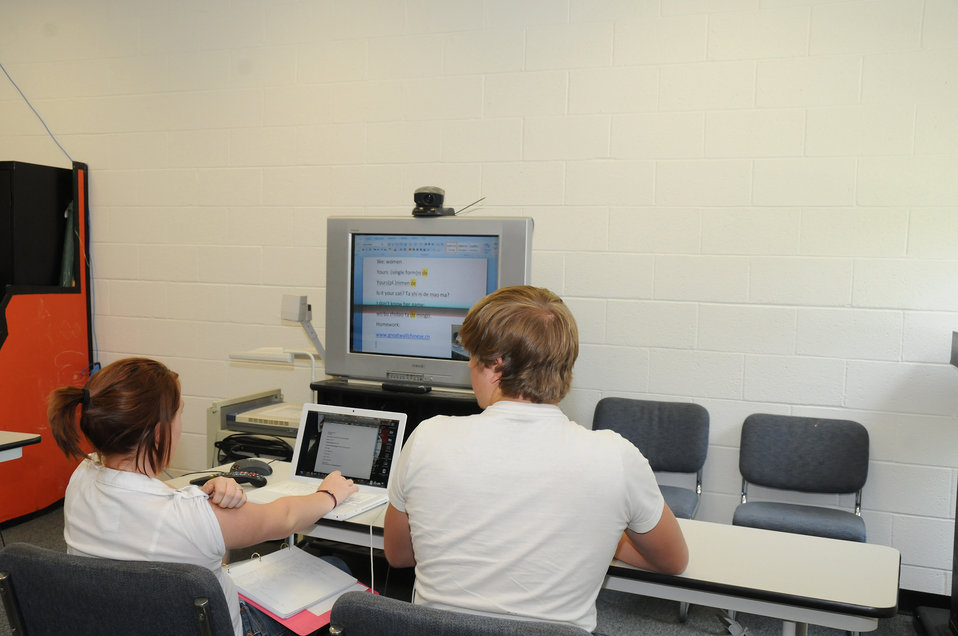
The students at Crescent High School in Crescent, Oklahoma are taking online courses in foreign languages, such as Chinese on August 9, 2009. The school received funding through the U. S. Department of Agriculture (USDA) Rural Development (RD) Distance Learning and Telemedicine Program (DLT) allocated through the American Recovery and Reinvestment Act of 2009 (ARRA).